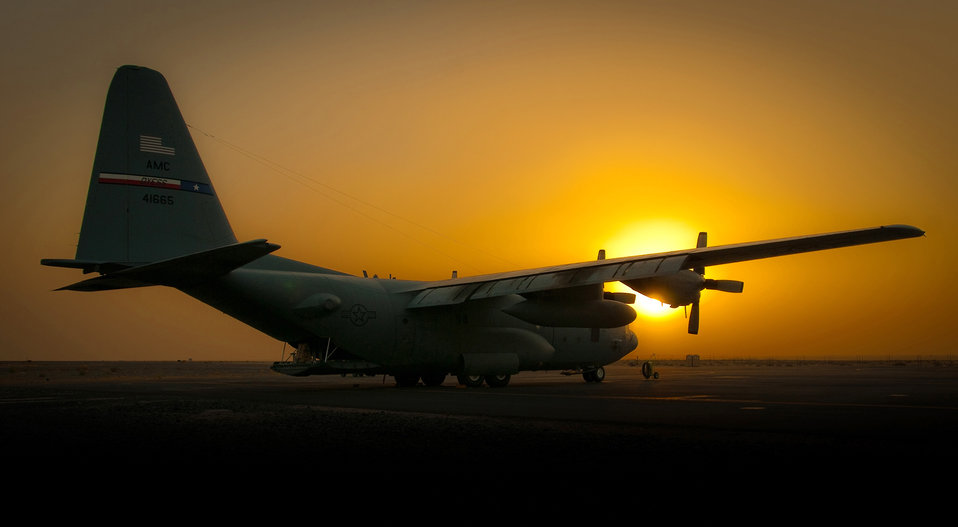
Waiting for a

The sun sets on a C-130 Hercules Aug. 31, 2010, as Operation Iraqi Freedom draws to a close at an air base in Southwest Asia. Operation New Dawn began Sept. 1, bringing with it a new mission focused on a strategic partnership signifying the U.S. government's long-term commitment to the government and people of Iraq.